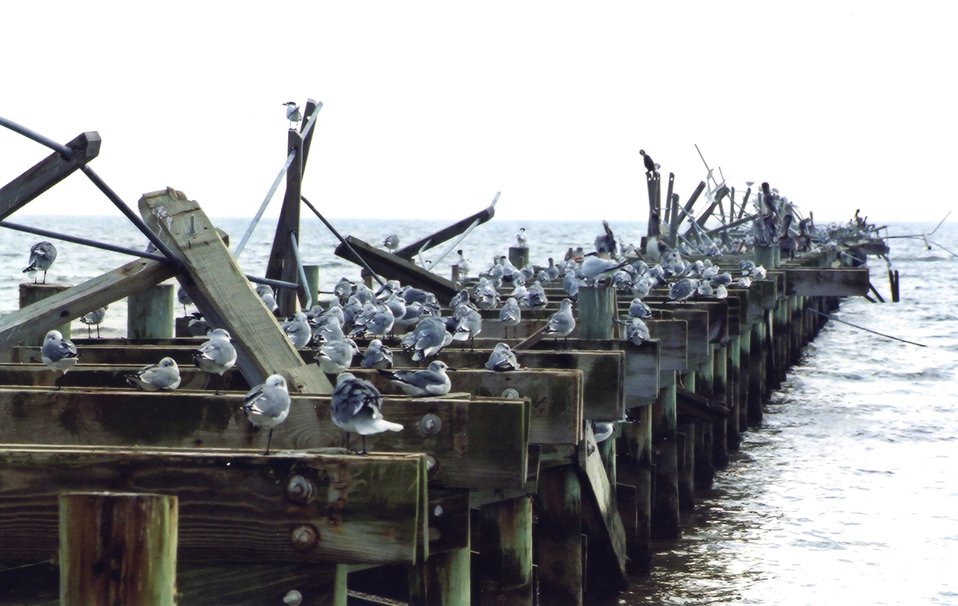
Seagulls, pelicans, and cormorants on a hurricane-damaged pier.